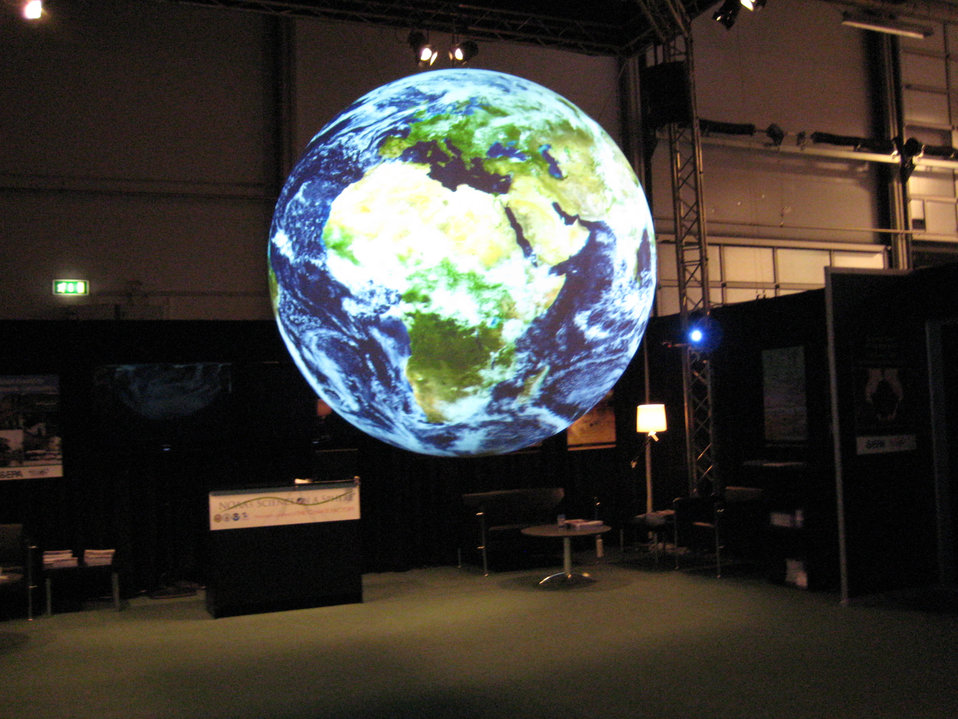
Science on a Sphere at the U.S. Center during COP15 (Conference of the Parties to the UN Framework Convention on Climate Change) in Copenhagen, Denmark December 10, 2009.